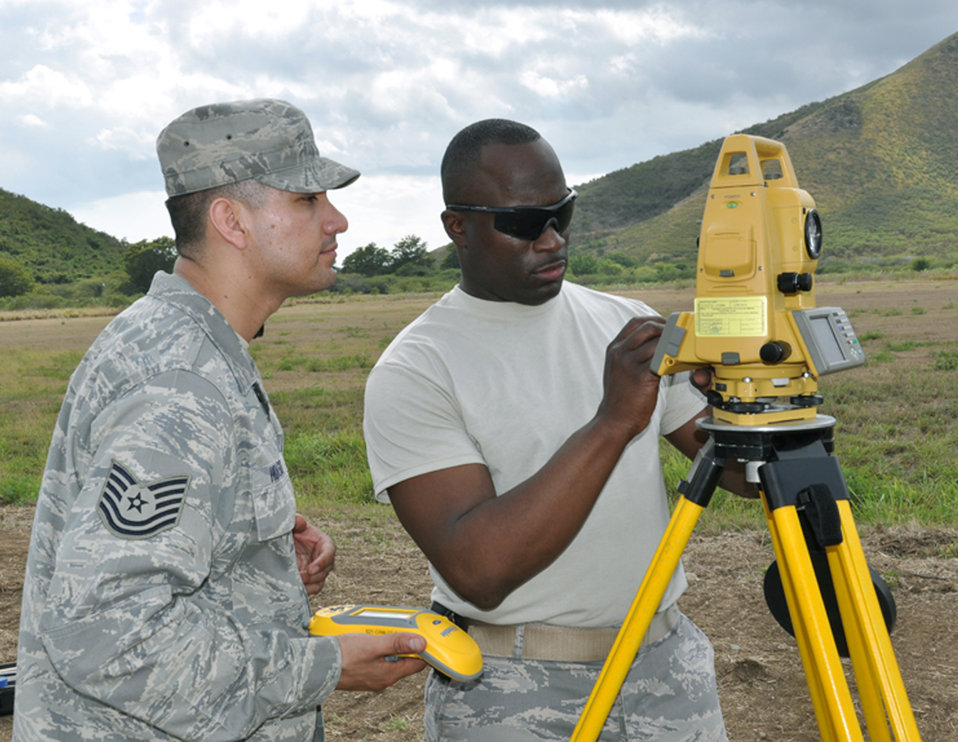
Vigilant Guard Exercise

Tech. Sgt. Rob Hidalgo (left) and Master Sgt. Lamar Heard, members of the 817th Contingency Response Group's